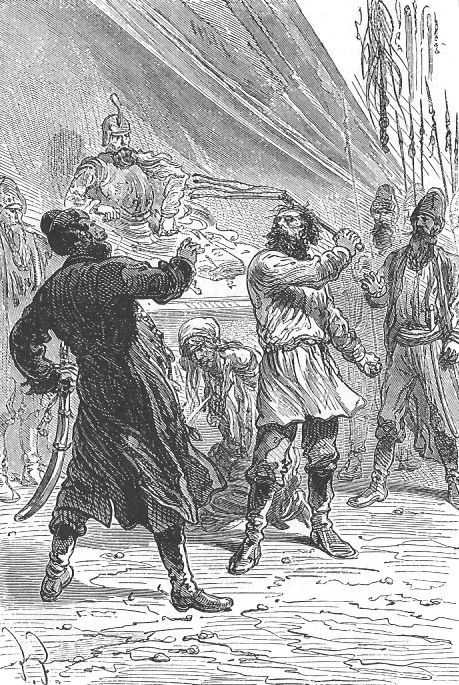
An illustration from the novel 'Michael Strogoff: The Courier of the Czar' by Jules Verne drawn by Jules Férat. Polski: Ilustracja powieści Juliusza Verne'a 'Michał Strogow, kurier carski' autorstwa Julesa Férata. Français : 'Michel Strogoff. Le courier du tzar', Jules Férat. Français : Levant le knout, il en déchira la figure d’Ivan Ogareff.